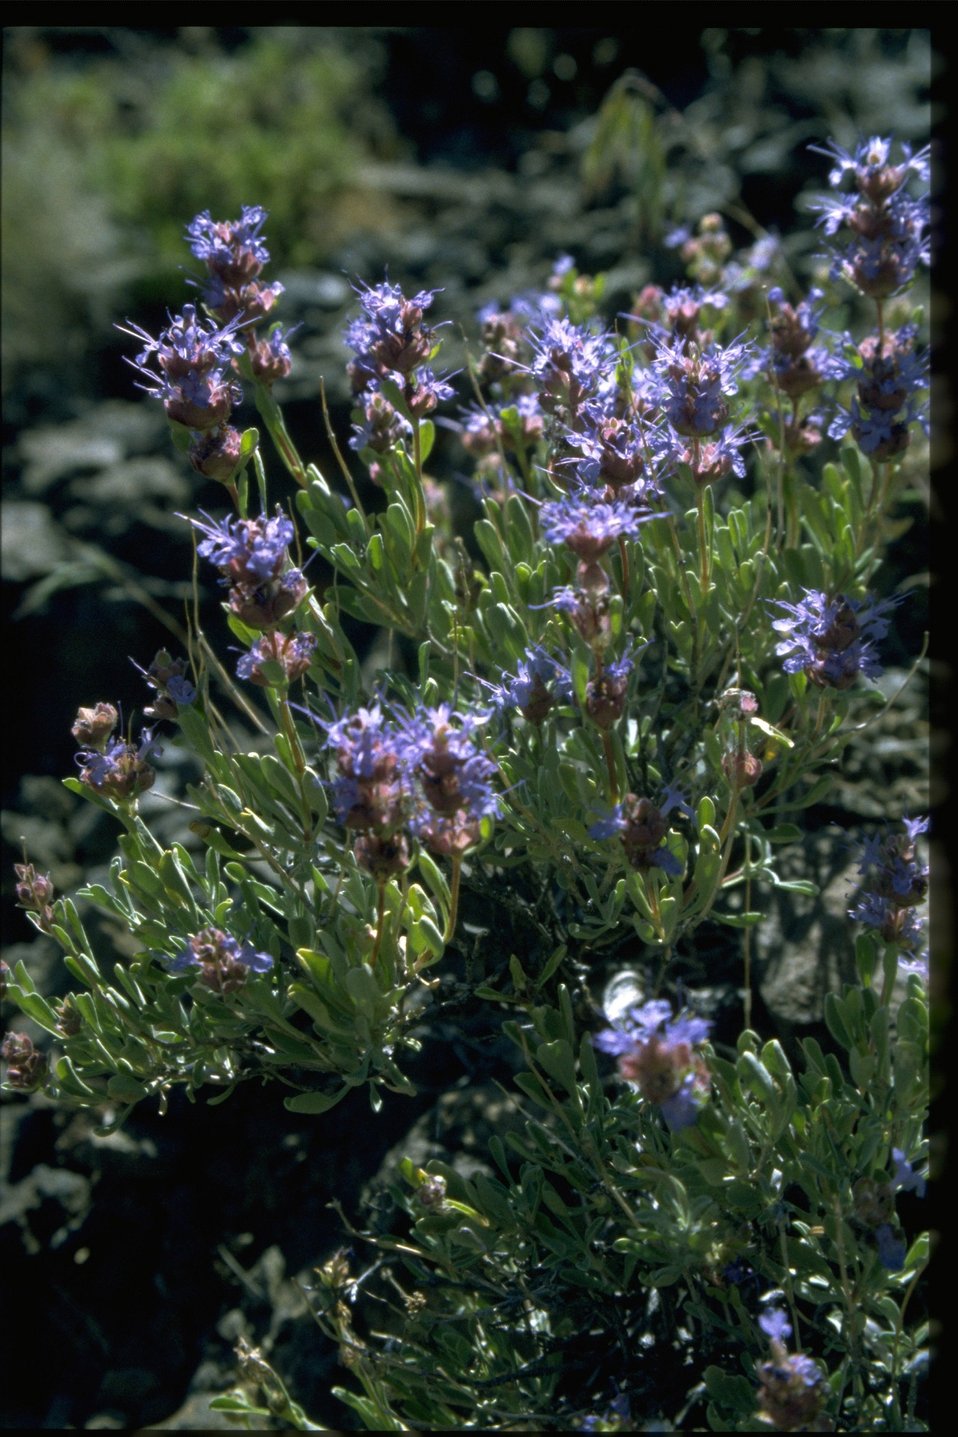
Medium shot of purple sage (Saliva dorrii).